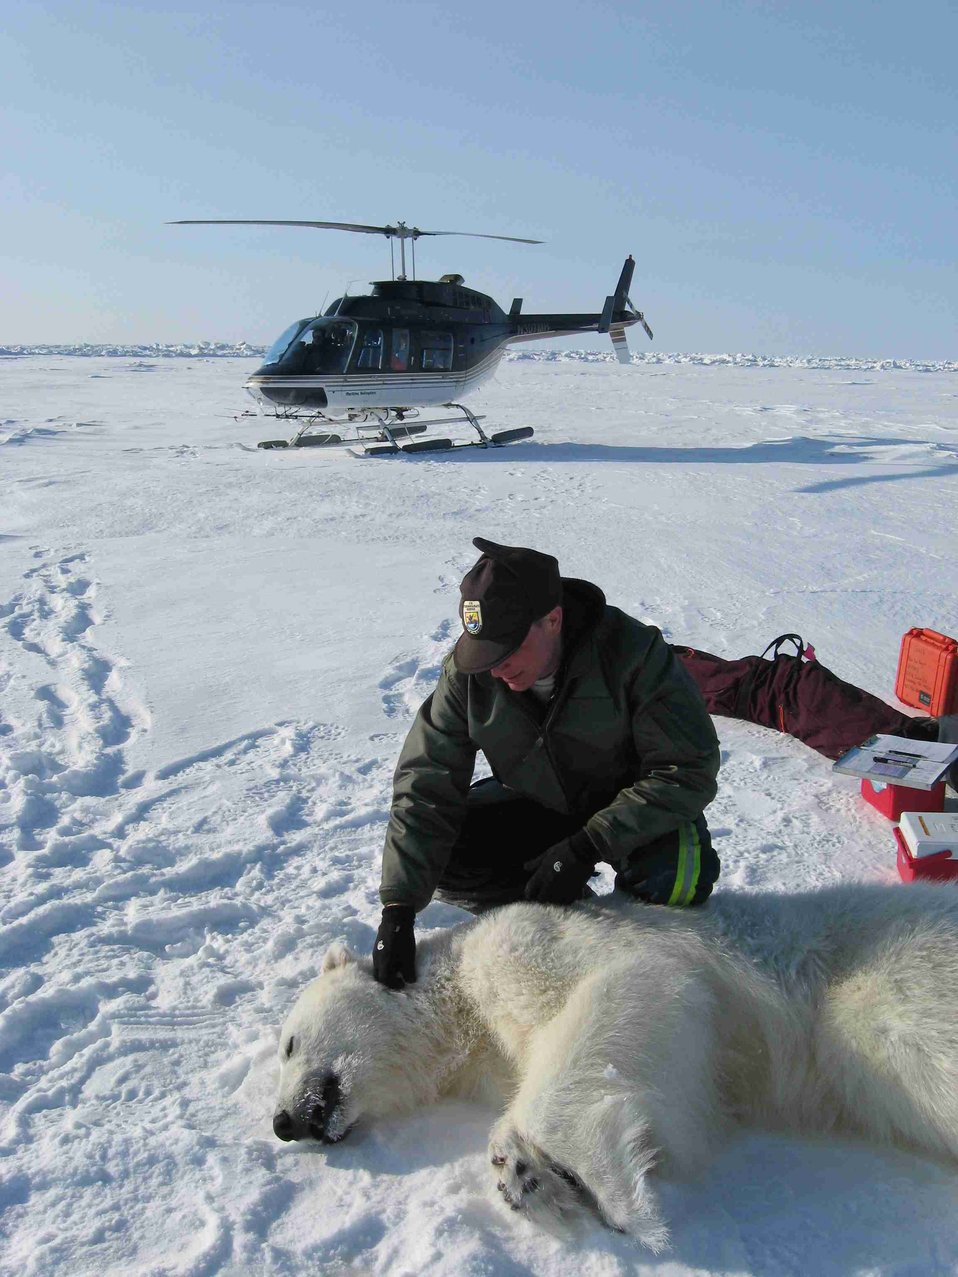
A USFWS Polar Bear Biologist Working With a Bear

A United States Fish and Wildlife Service polar bear biologist works with a tranquilized bear on the ice.